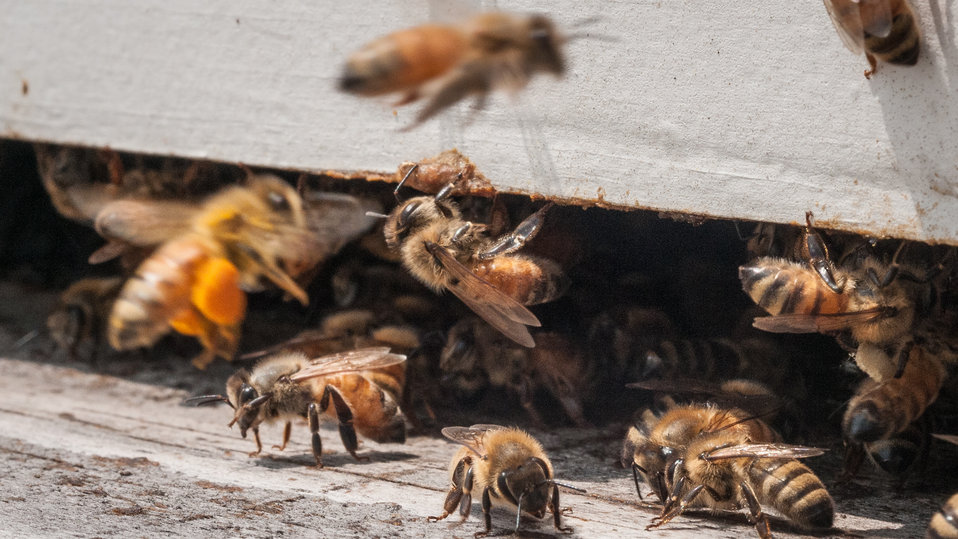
Honey bee with 'saddlebags' of pollen attached to thier hind legs return to the U.S. Department of Agriculture People's Garden apiary, atop the headquarters' Whitten Building in Washington, D.C., on Wednsday, May 22, 2013. The bees gather pollen from plants within about two miles to bring back to the hive for food. The activity of gathering from many flowers before returning moves pollen from plant to plant. Bees provide one of the several types pollination methods.